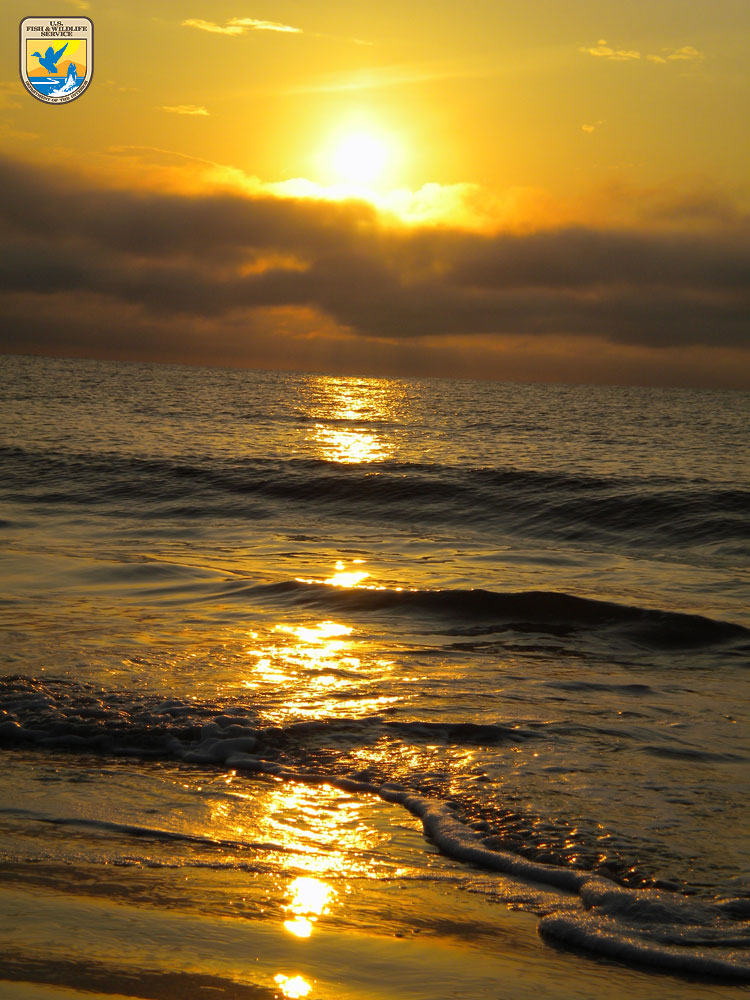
Amber Dawn - Region 4

The sun is reflected in the waves on the shore of Blackbeard Island.